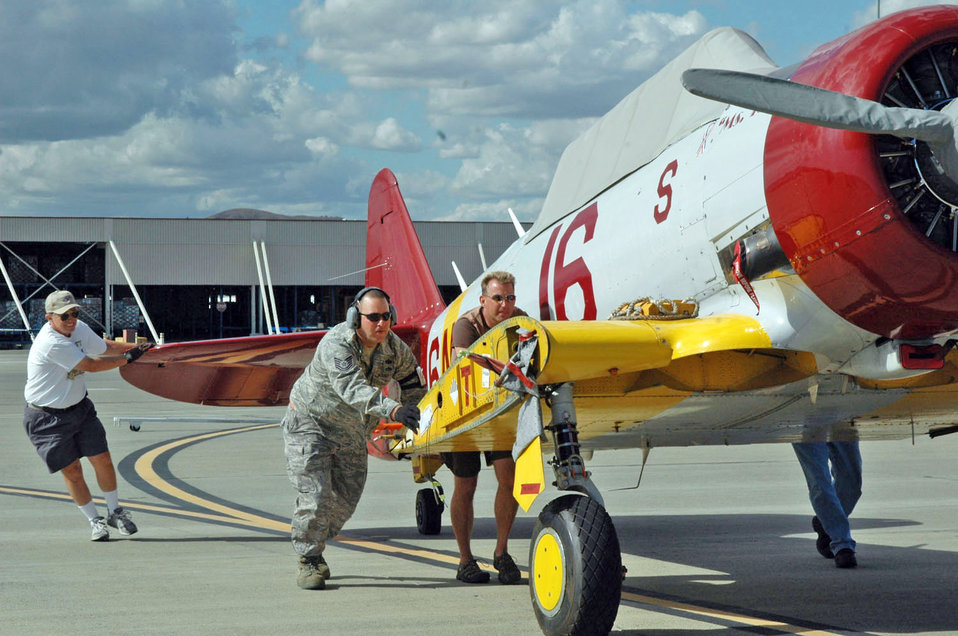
On the way

At Travis Air Force Base, Calif., military and civilian members of the 60th Aerial Port Squadron along with owner Bruce Mayes (far left) load a SNJ-5B vintage aircraft onto a C-5 Galaxy Sept. 14, 2009. The aircraft will make an appearance at the upcoming